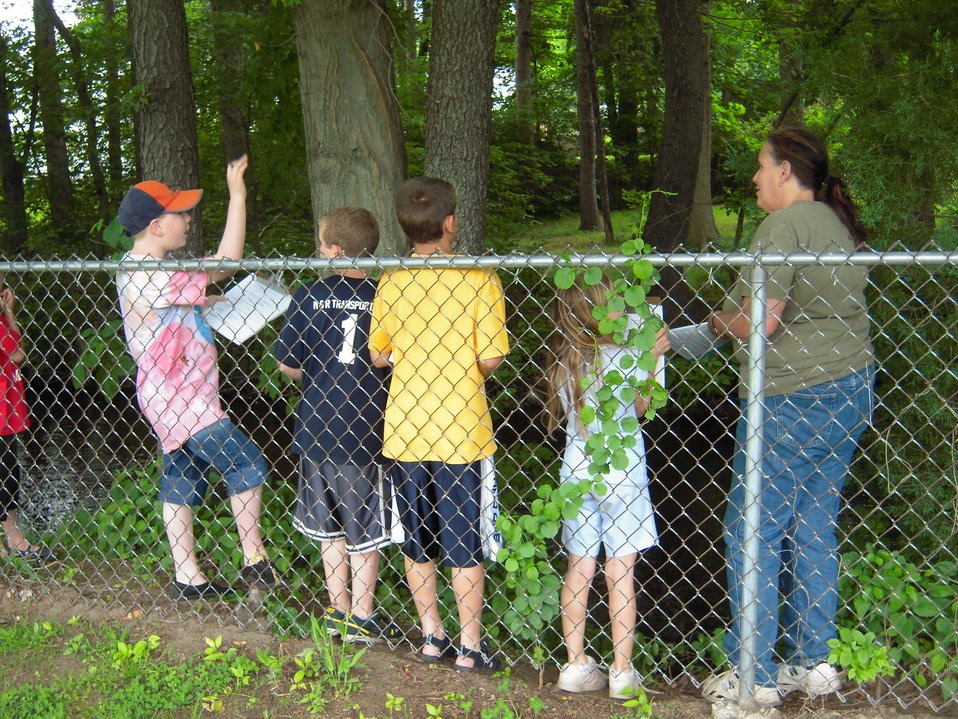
Discussing plants along riverbed